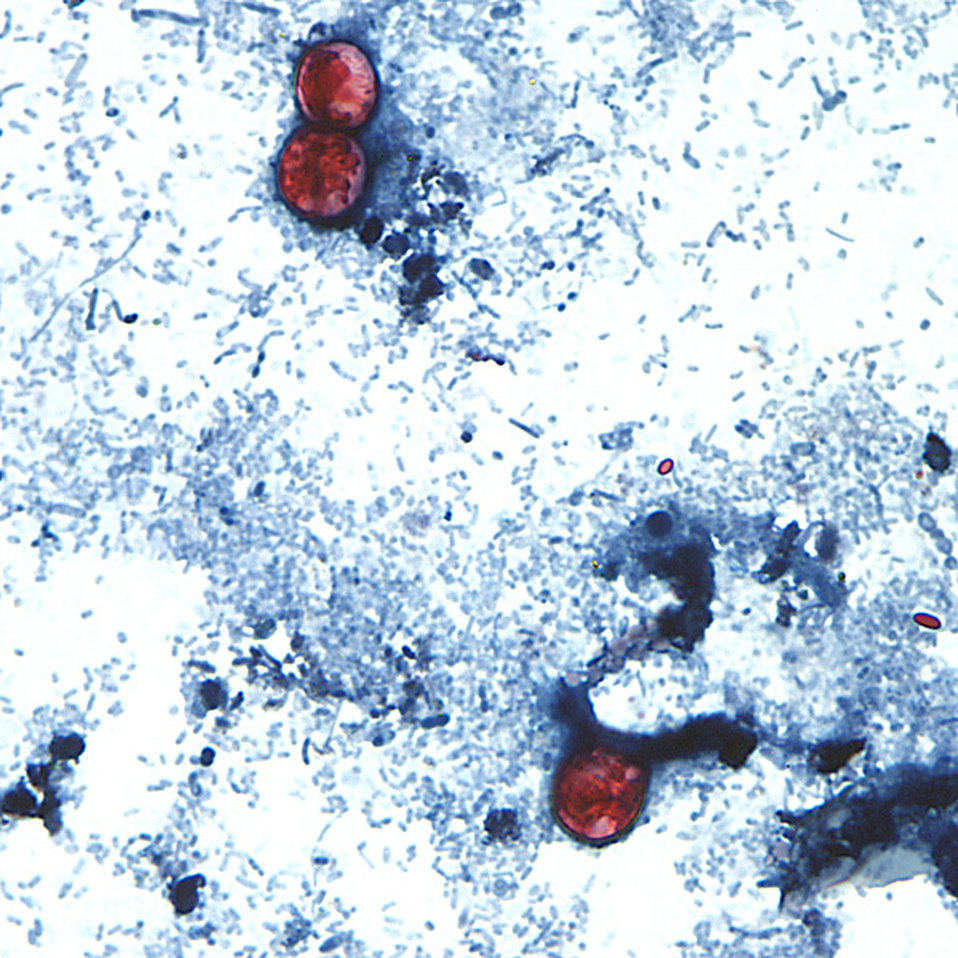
This photomicrograph of a fresh stool sample, which had been prepared using a 10% formalin solution, and stained with safranin, revealed the presence of three uniformly stained Cyclospora cayetanensis oocysts in the field of view.